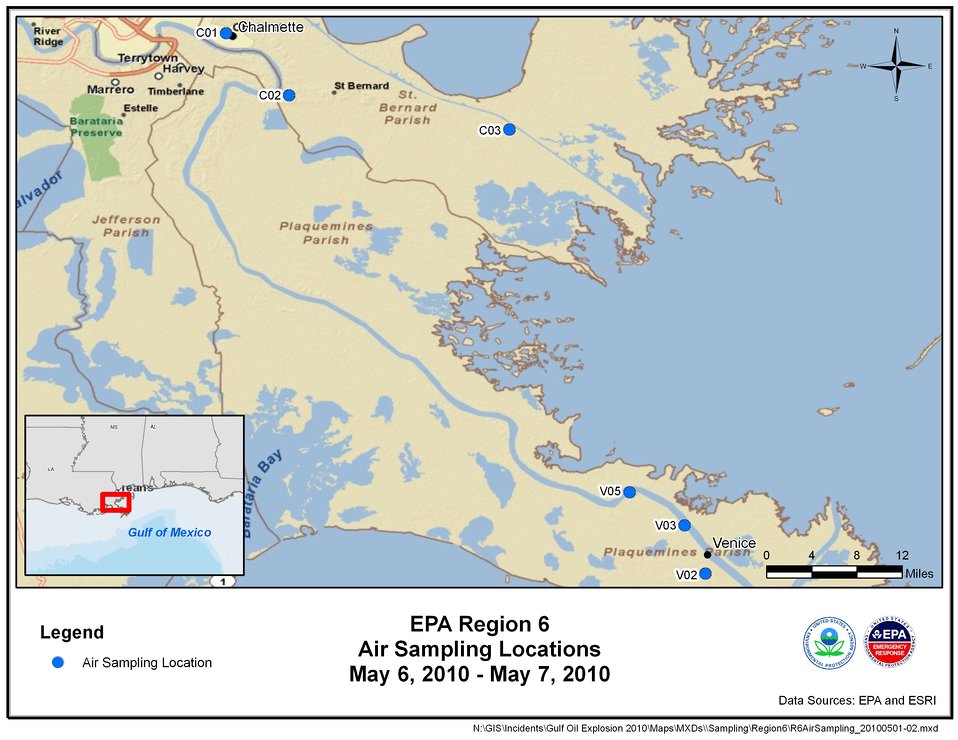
EPA Air Sampling Locations May 4-7, 2010